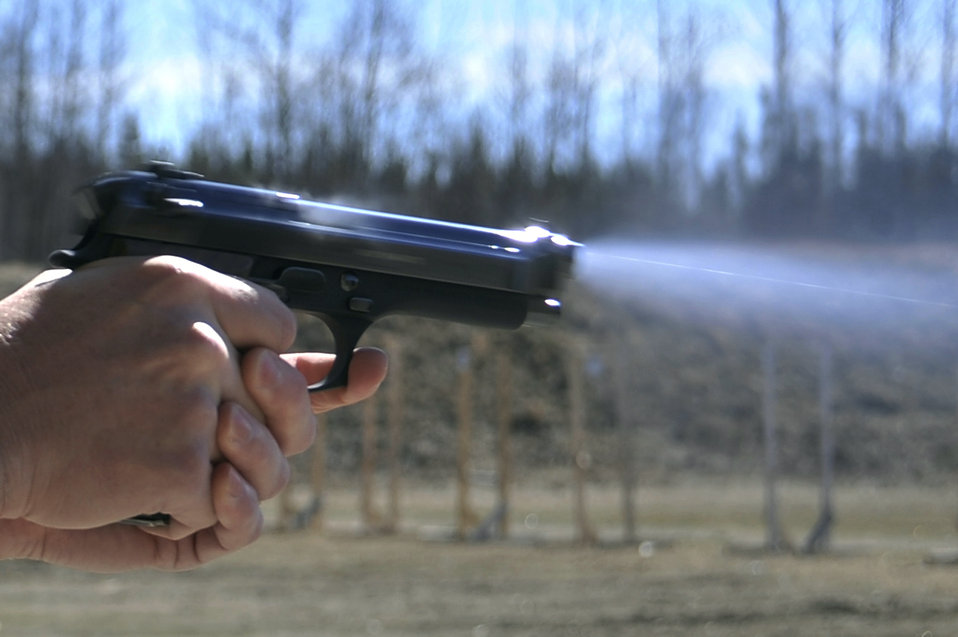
Shoot 'em up

An M9 Pistol is fired May 16, 2011, during a pistol shoot at the combat arms firing range at Eielson Air Force Base, Alaska.